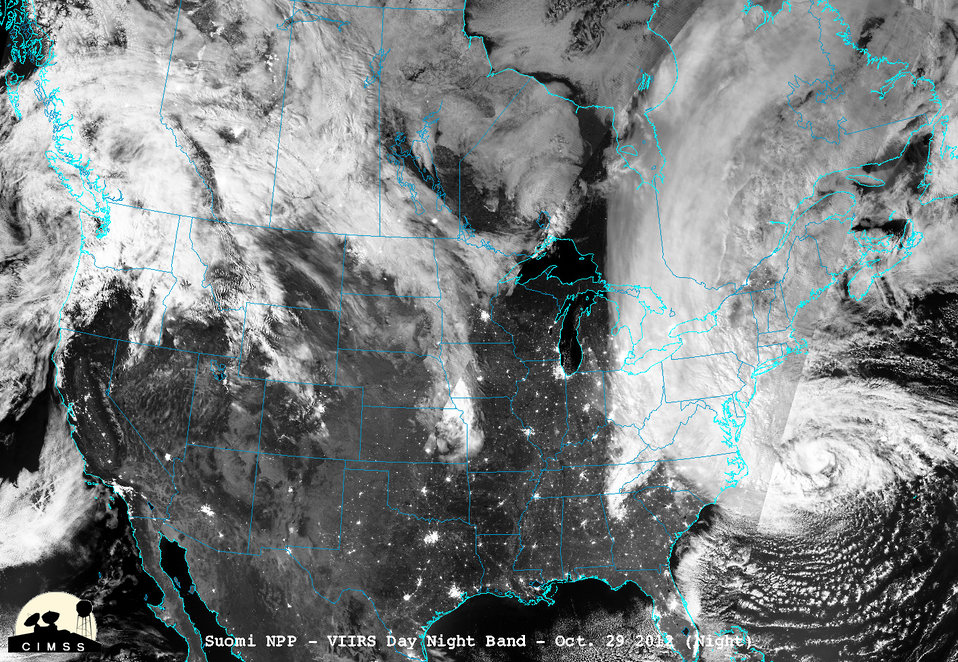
November 2, 2012: Satellite View of Sandy at Night

On Monday, October 29, 2012, Hurricane Sandy made landfall 5 miles south of Atlantic City, New Jersey, with maximum sustained winds near 80 mph. This satellite image was taken 16 to 18 hours before Sandy's landfall on the New Jersey coast, using the Visible Infrared Imaging Radiometer Suite on NASA's Suomi National Polar-orbiting Partnership satellite.

The Department of Energy, in partnership with the Federal Energy Management Administration (FEMA) and other federal agencies, is working around the clock to support the states and utilities that have been impacted by Sandy. Learn more about federal efforts to support utility power restoration.